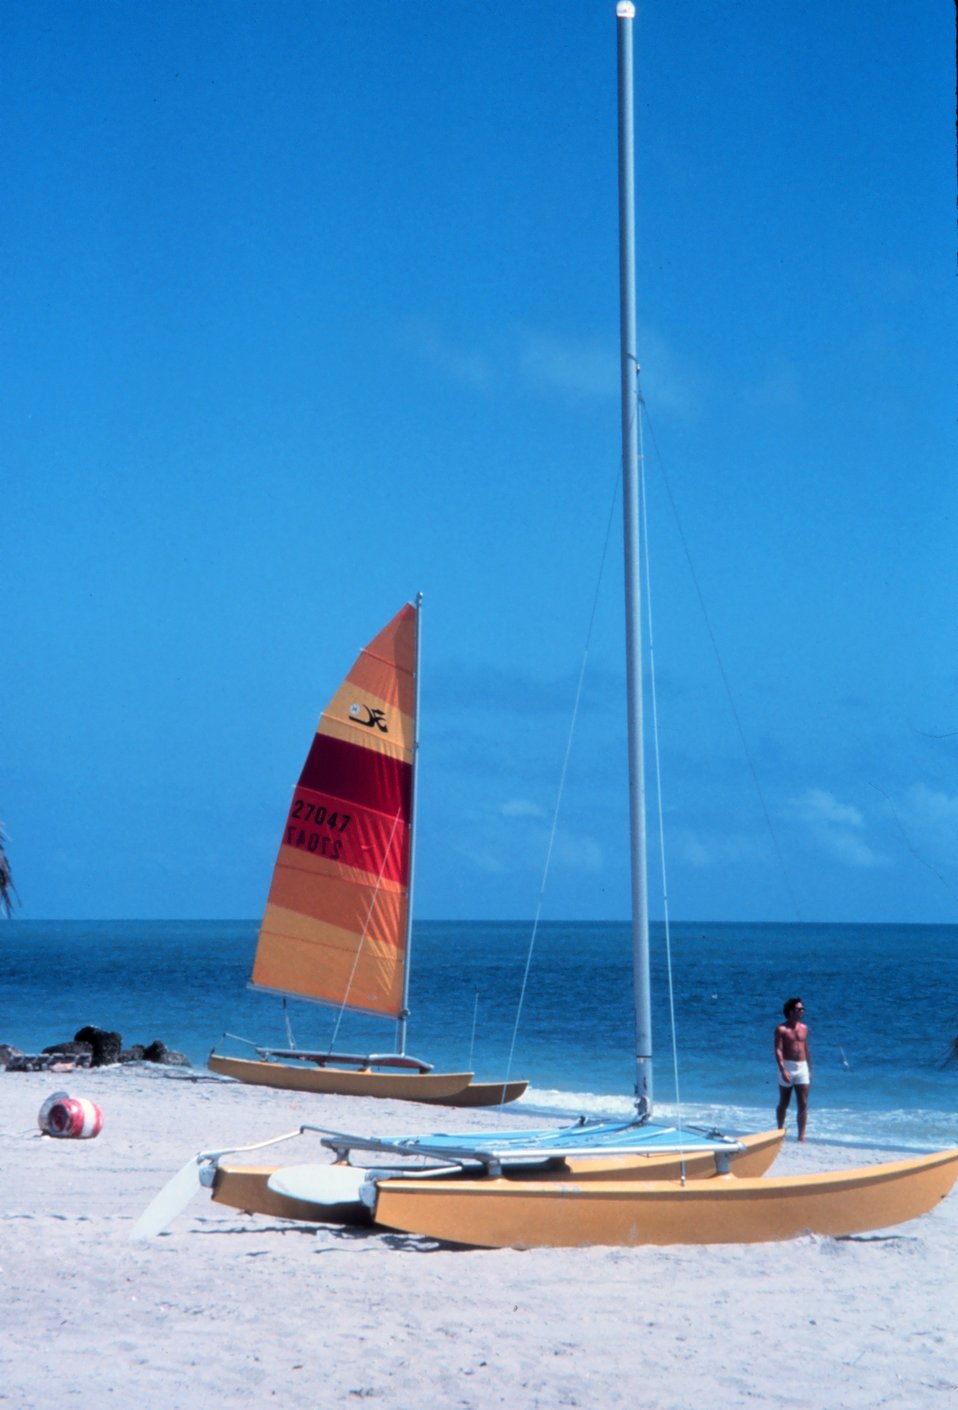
A beach scene at Key Biscayne